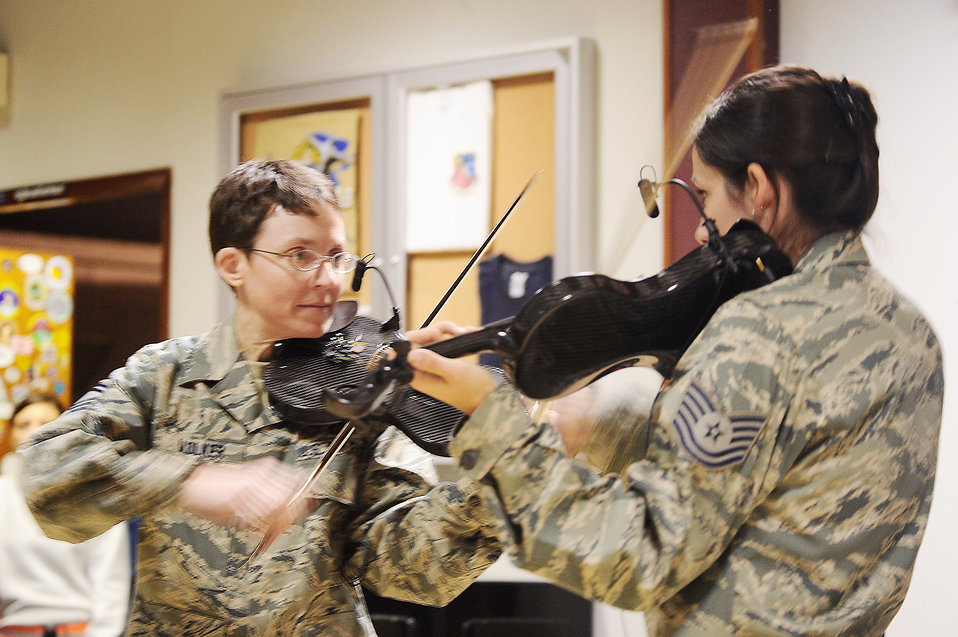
'Celtic Aire' performs in Southwest Asia

Senior Master Sgt. Deborah Volker (left) and Tech. Sgt. Emily Lewis face off on the violin during a